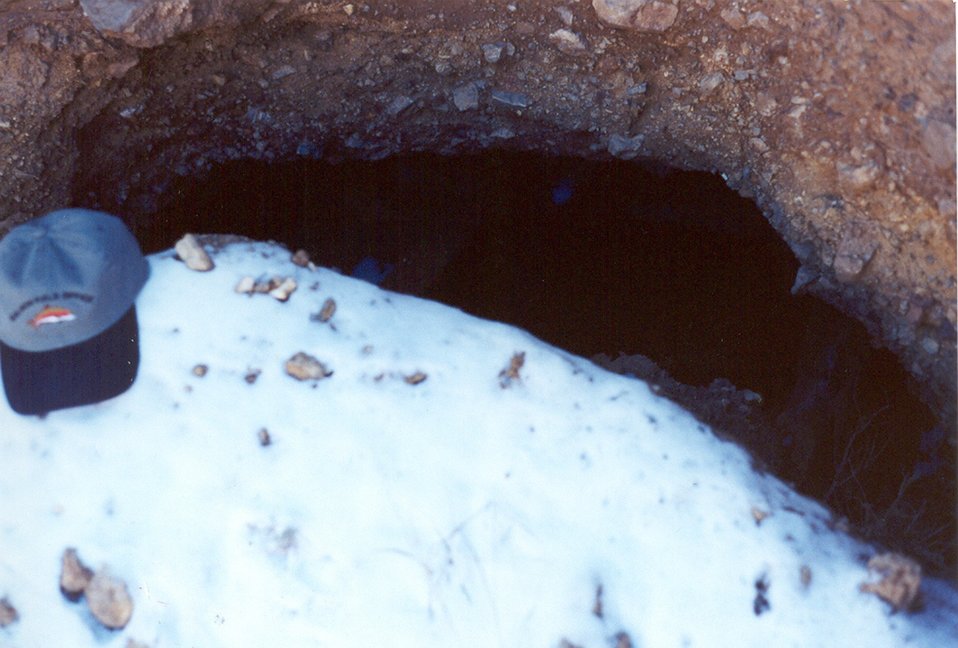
Abandoned Mine adit Salmon Field Office Upper Columbia Salmon Clearwater District UCSC